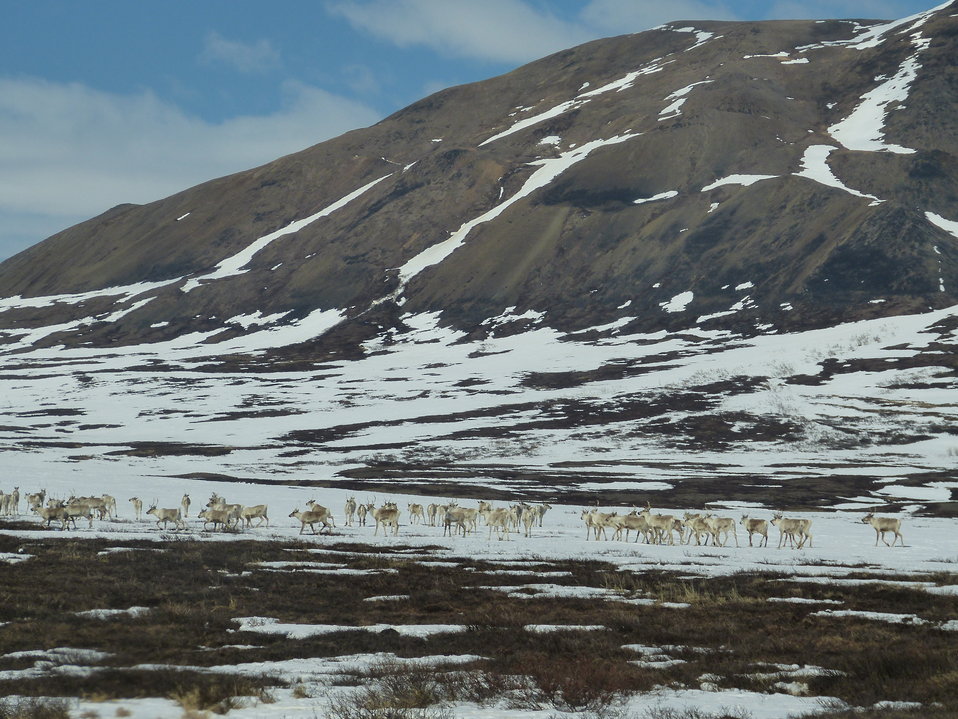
Caribou in Kilbuck Mountains on Yukon Delta National Wildlife Refuge

Photo credit: Kristine Sowl
USFWS, Yukon Delta National Wildlife Refuge